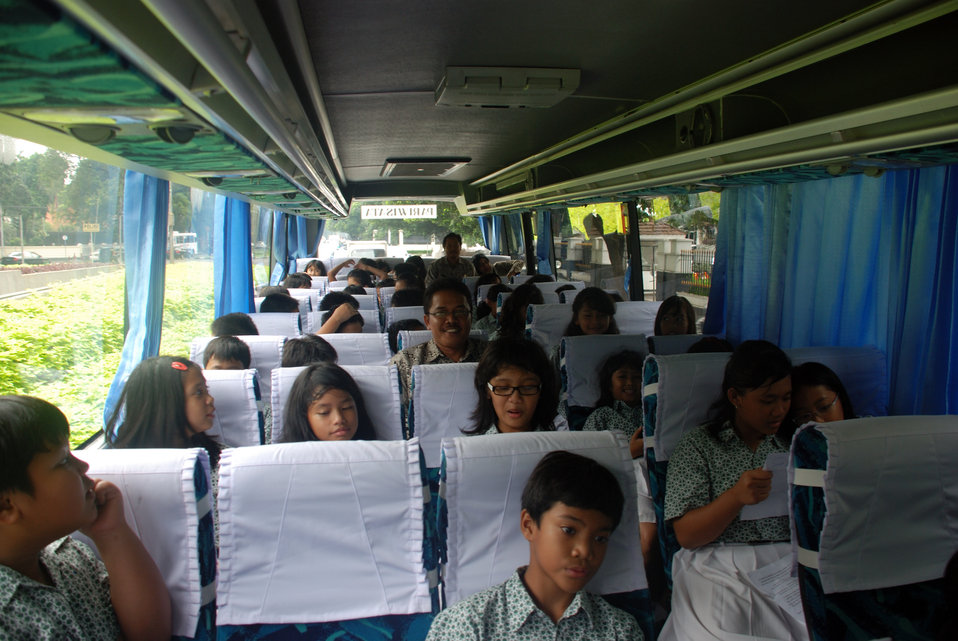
Behind the Scenes: Indonesian Students Prepare for Secretary Clinton's Arrival

Menteng Elementary School No. 1 students aboard the bus en route to Halim Airport in Jarkarta, Indonesia during the visit of U.S. Secretary of State Hillary Rodham Clinton February 18, 2009.